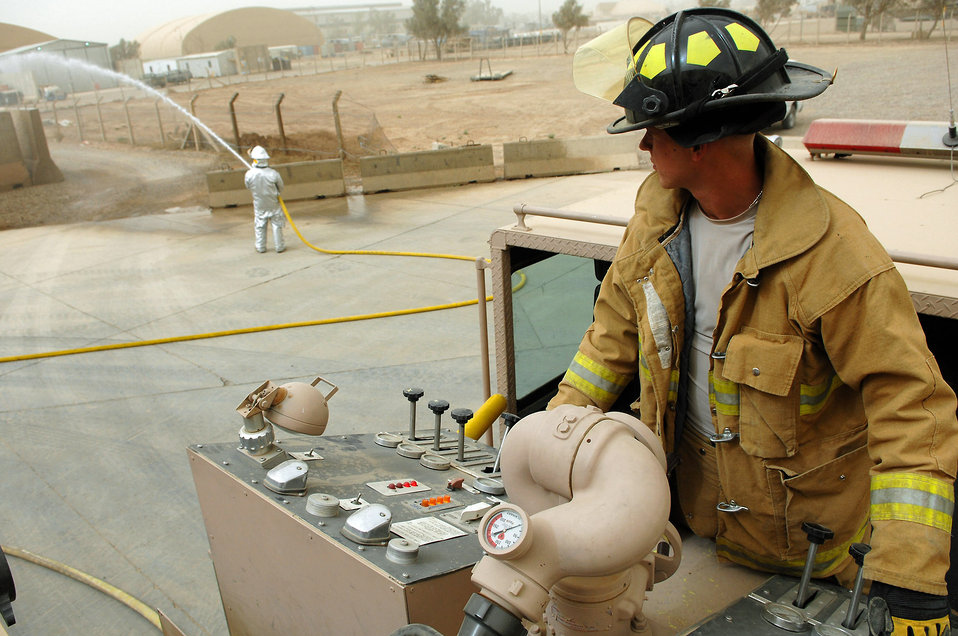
Firefighting is a joint venture

Army Spc. James Taylor operates the pump panel during hose advancement and pump training with Airman 1st Class Adam Baumgardner April 29 at Balad Air Base, Iraq. The firefighters here train together and share critical skills and knowledge everyday. Specialist Taylor is an 8th Ordnance Company firefighter deployed from Fort Bragg, N.C., and Airman Baumgardner is a 332nd Expeditionary Civil Engineer Squadron firefighter deployed from Malmstrom Air Force Base, Mont.